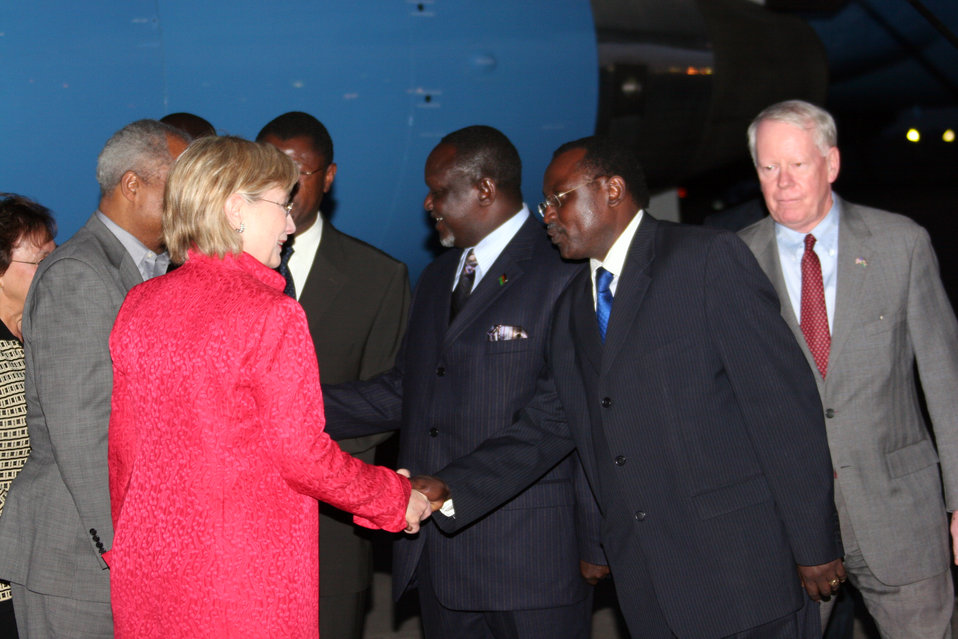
Secretary Clinton Arrives in Nairobi, Kenya

U.S. Secretary of State Hillary Rodham Clinton is greeted by Ambassador Chepsongrol (in charge of American Desk at Kenyan Ministry of Foreign Affairs) during her arrival at Jomo Kenyatta International Airport in Nairobi, Kenya August 4, 2009.